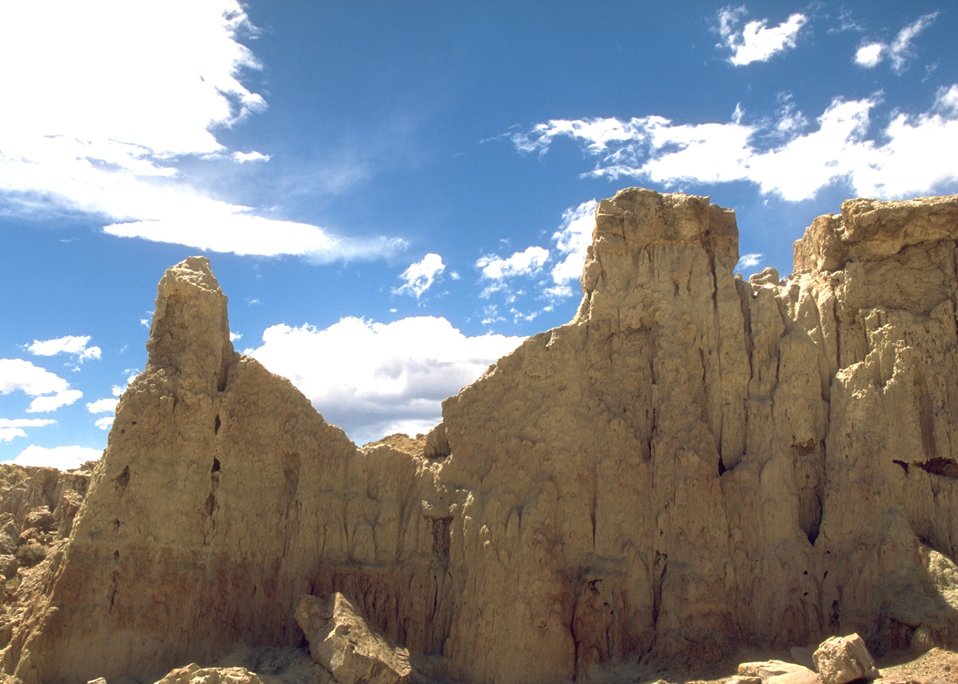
Gooseberry Interpretive Area, Worland Field Office.